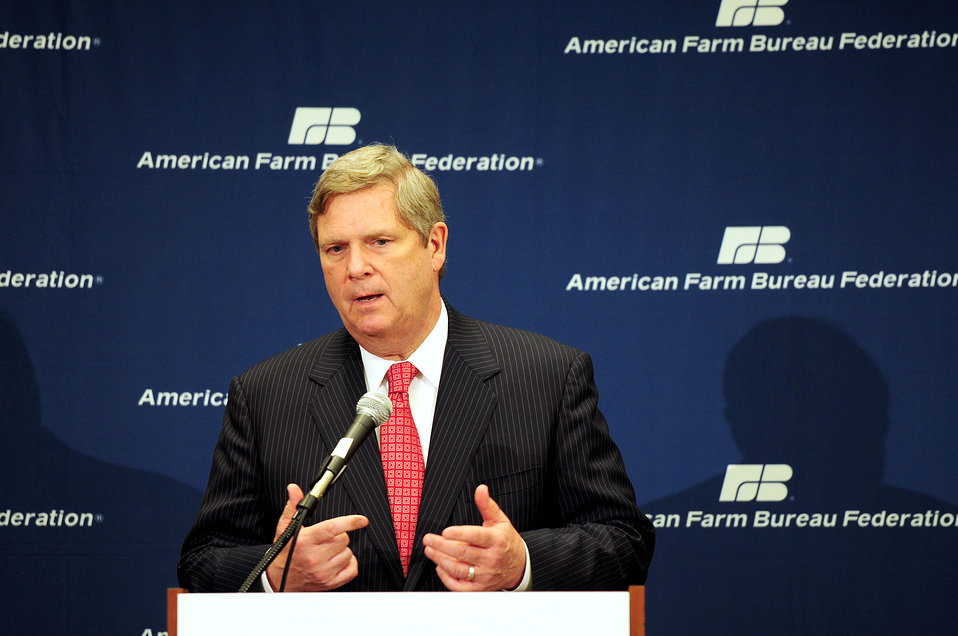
Agriculture Secretary Tom Vilsack presents USDA's Blueprint for Stronger Service, a plan to Increase Efficiency in USDA Operations, on Monday, January 9, 2012 in Honolulu, Hawaii.